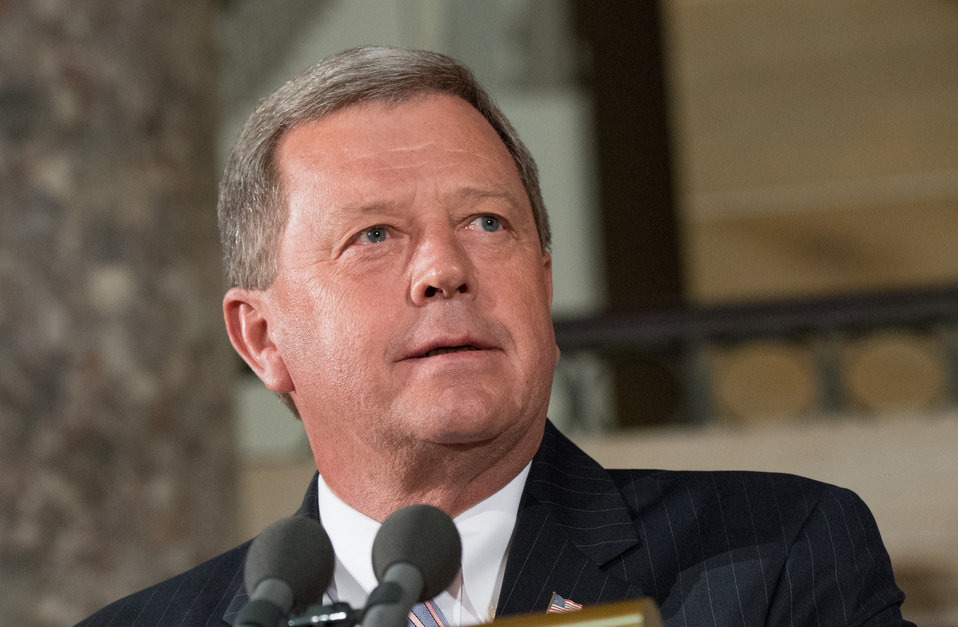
U.S. Representative Tom Latham speaks at the dedication of the Dr. Norman Borlaug statue in the National Statuary Hall at the U. S. Capitol in Washington, D.C. on Tuesday, Mar. 25, 2014. Today commemorates 100 years since Dr. Borlaug’s birth. Through his scientific and humanitarian achievements, Nobel Laureate Dr. Norman E. Borlaug (1914-2009) has been credited with saving millions of people from starvation in developing countries. His collaborative work with scientists in Mexico on a high-yielding, disease resistant dwarf wheat sparked the Green Revolution of the 1960s. The National Statuary Hall Collection in the U.S. Capitol is composed of statues donated by individual states to honor persons notable in their history.